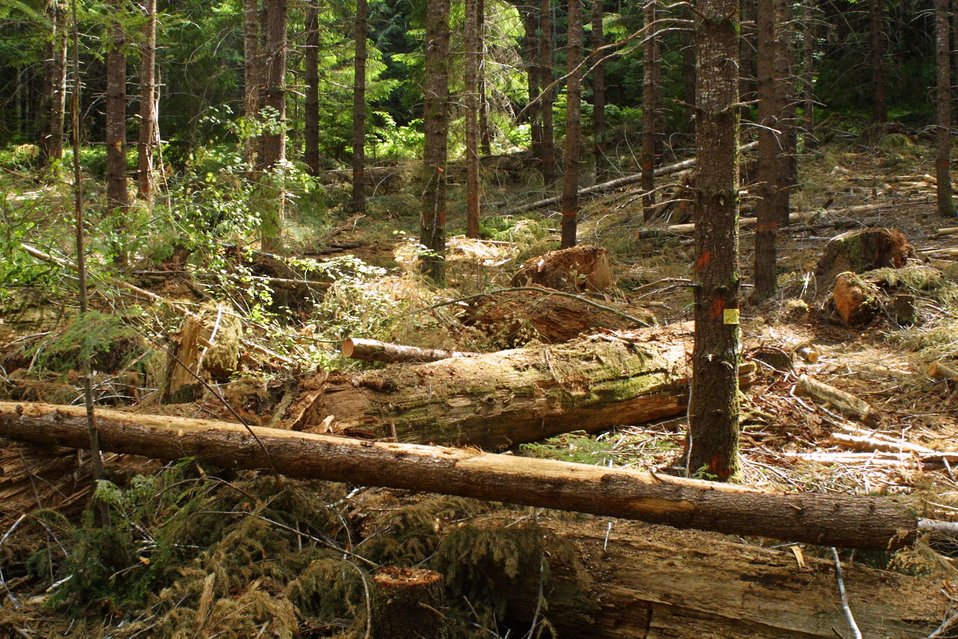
Camas East Timber Sale in Late Successional Reserve.